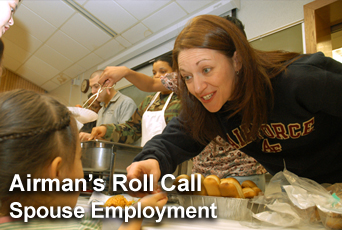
Airman's Roll Call: Spouse employment opportunities

This week's Airman's Roll Call highlights the opportunities the Airman and Family Readiness Center has for employment assistance services to help spouses find suitable positions in their chosen career fields.